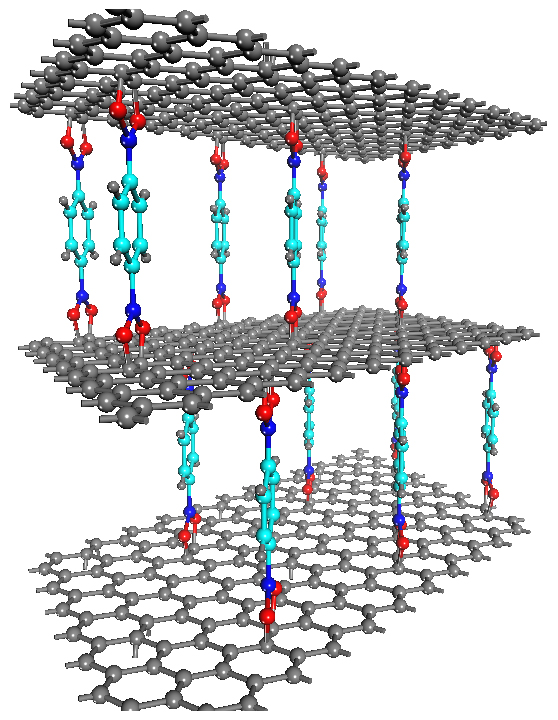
Graphene; Hydrogen Storage

A graphene-oxide framework (GOF), formed of layers of graphene connected by boron-carboxylic 'pillars'. GOFs such as this one are just beginning to be explored as a potential storage medium for hydrogen and other gases.